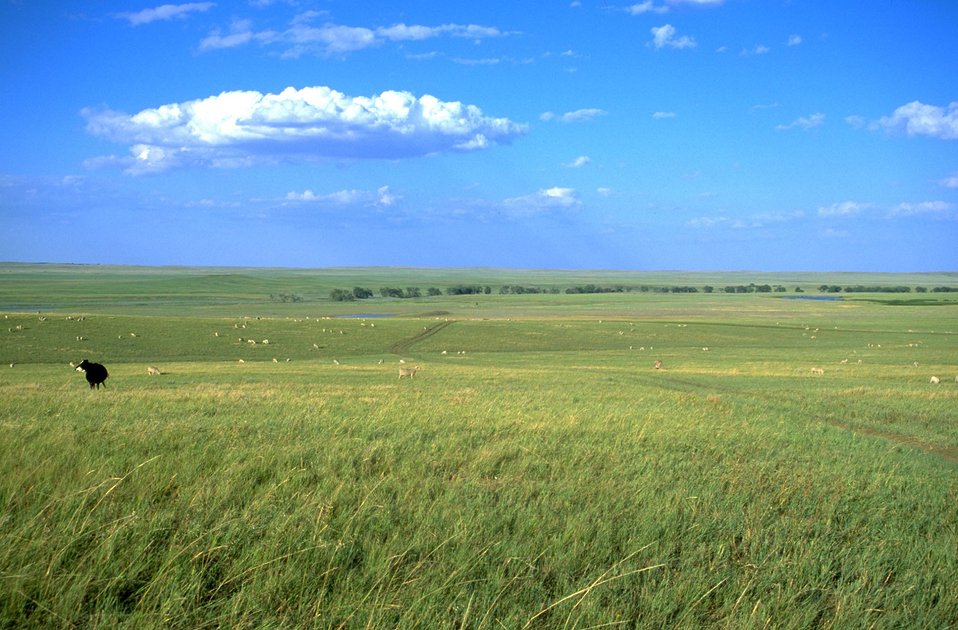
Grassland with Sheep grazing 35 miles north of Belle Fourche